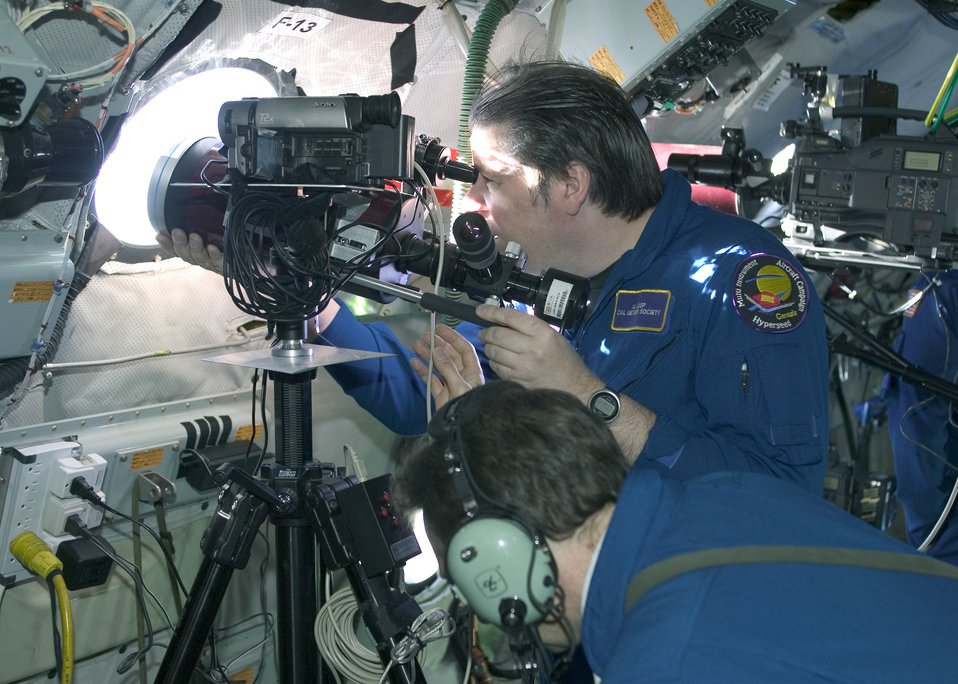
Keeping an eye on Genesis

EDWARDS AIR FORCE BASE, Calif. -- Scientists onboard a specially modified NKC-135 Stratotanker, called the Flying Infrared Signature Technology Aircraft, observe NASA's Genesis spacecraft re-entering the Earth's atmosphere Sept. 8.